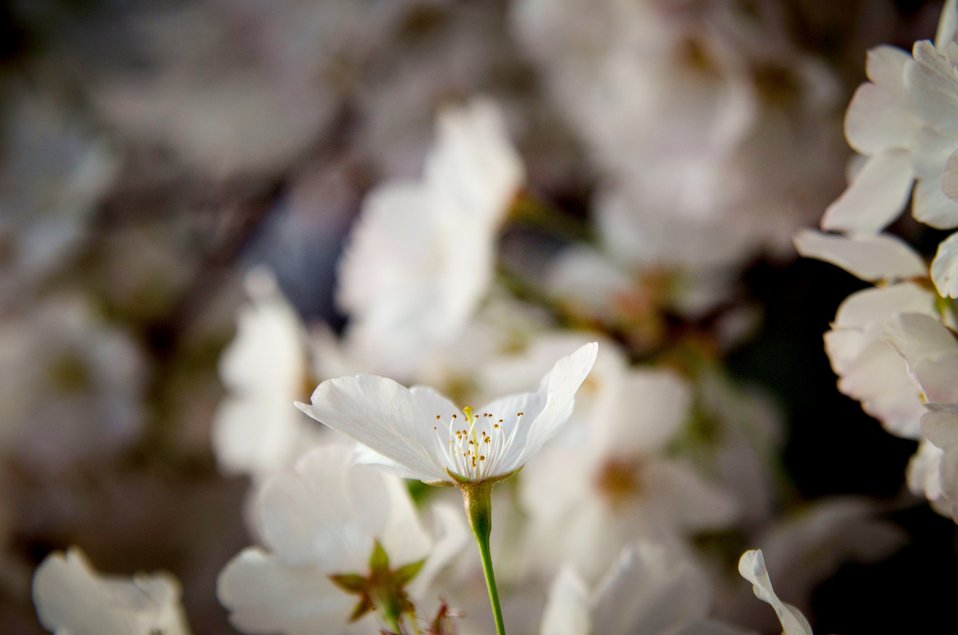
Cherry blossoms at the Tidal Basin in Washington, D.C., on Tuesday, March 20, 2012.